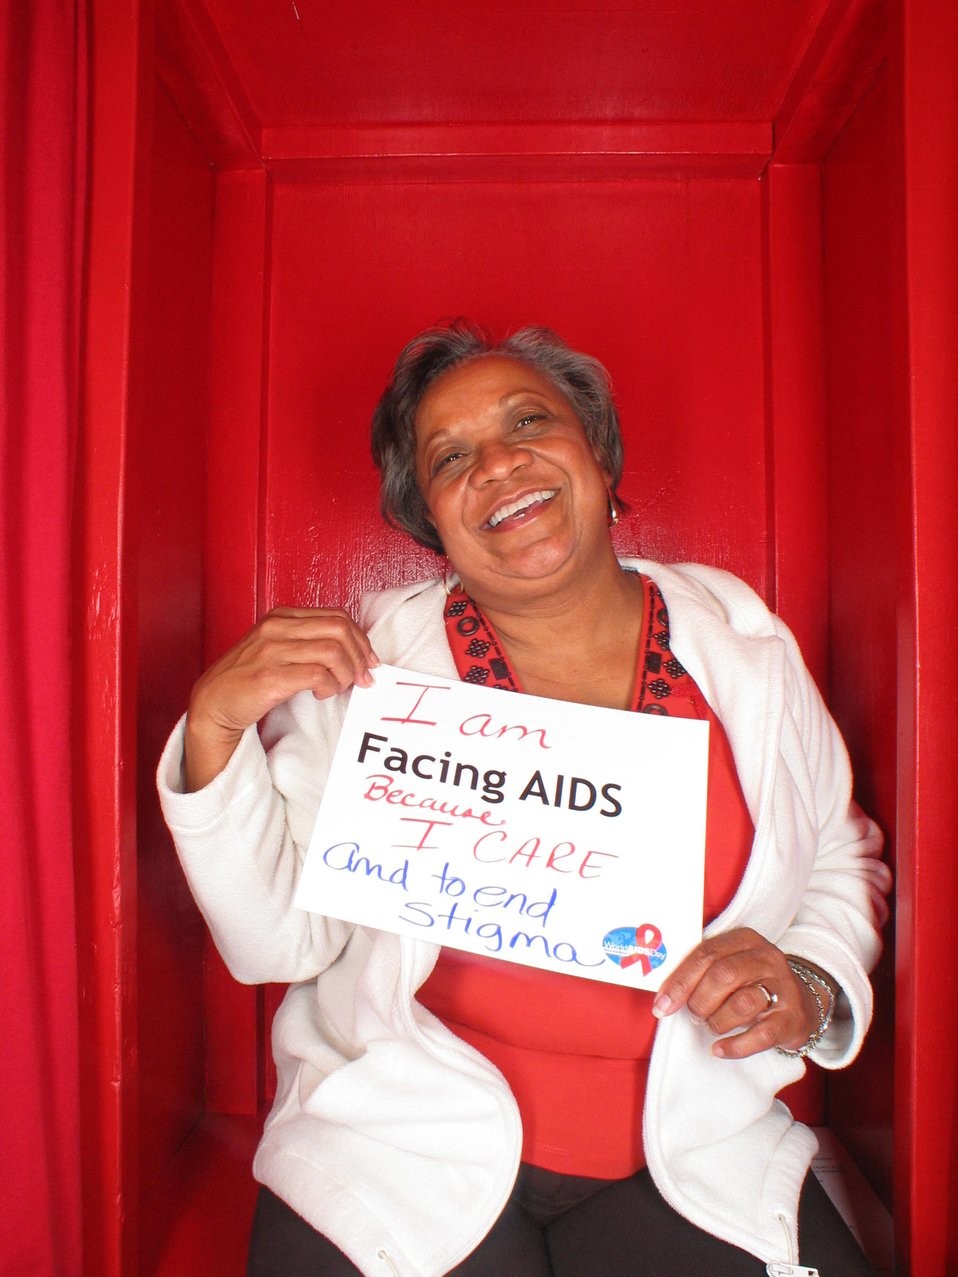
I am Facing AIDS because I care and to end stigma